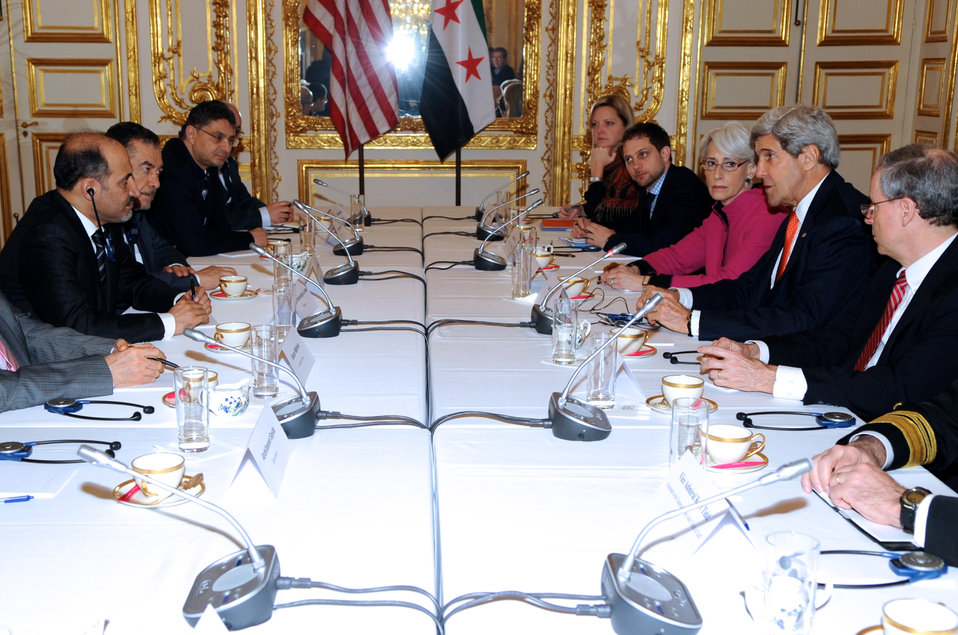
Secretary Kerry, U.S. Delegation Meets With Syrian Opposition Coalition in Paris

U.S. Secretary of State John Kerry, flanked by U.S. Ambassador to Syria Robert Ford and Under Secretary of State for Political Affairs Wendy Sherman, sits across from Syrian Opposition Coalition President Ahmed al-Jarba and his team before a meeting in Paris, France, on January 13, 2014.